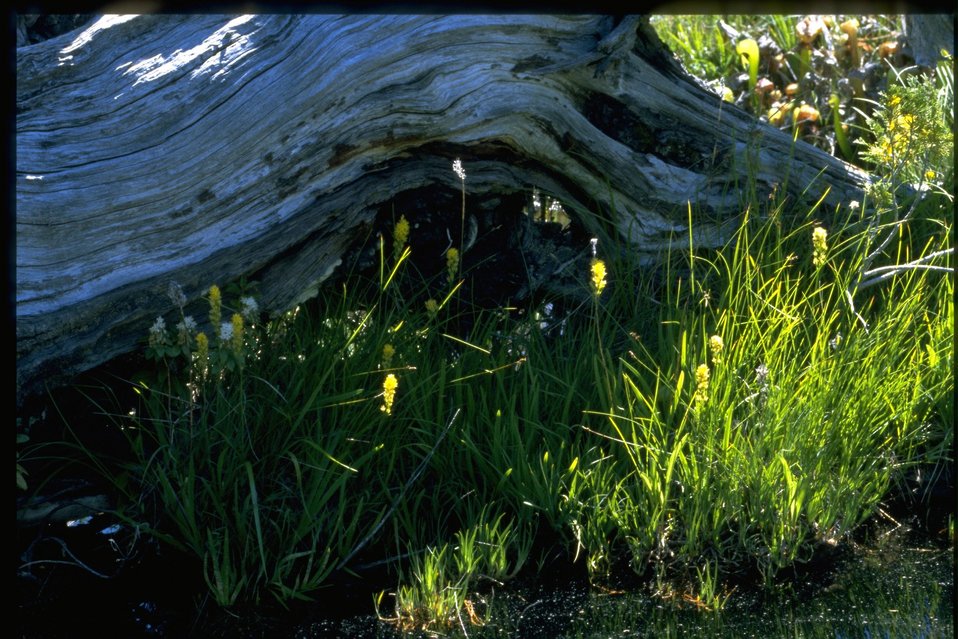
Farshot of Northecium californicum.